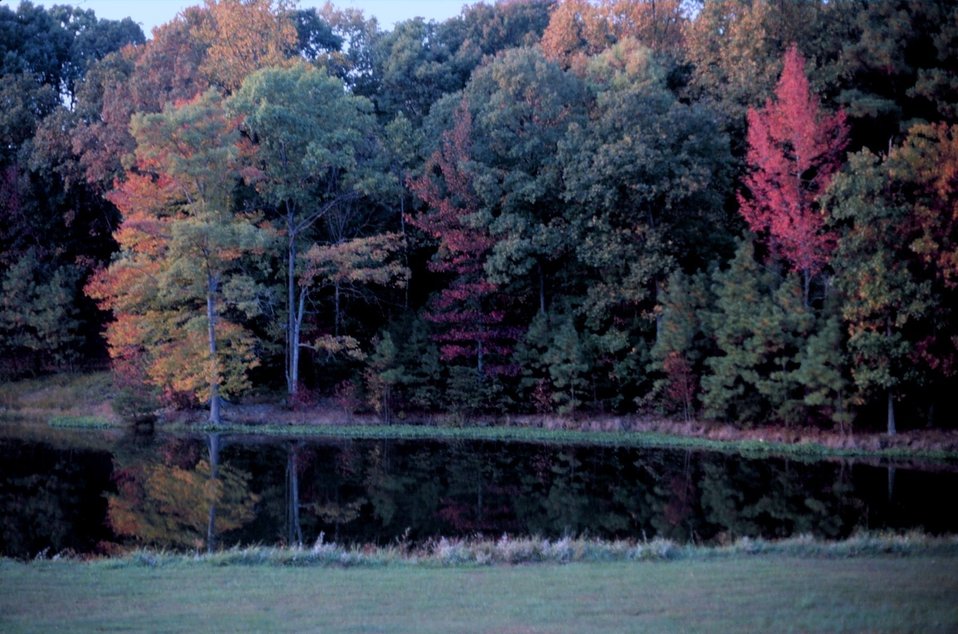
Fall colors grace St. Johns Pond, a tidal pond off of the St. Mary's River